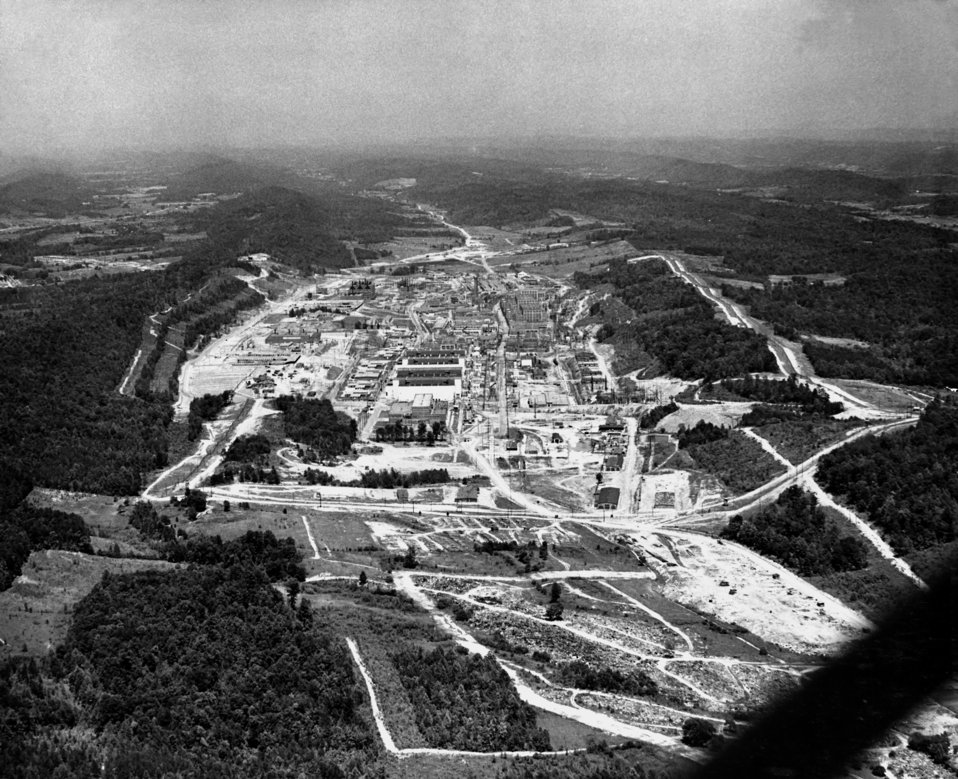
Aerial of Y-12 Looking East Oak Ridge 1947

Pro-3529 DOE photo Ed Westcott Oak Ridge Tennessee